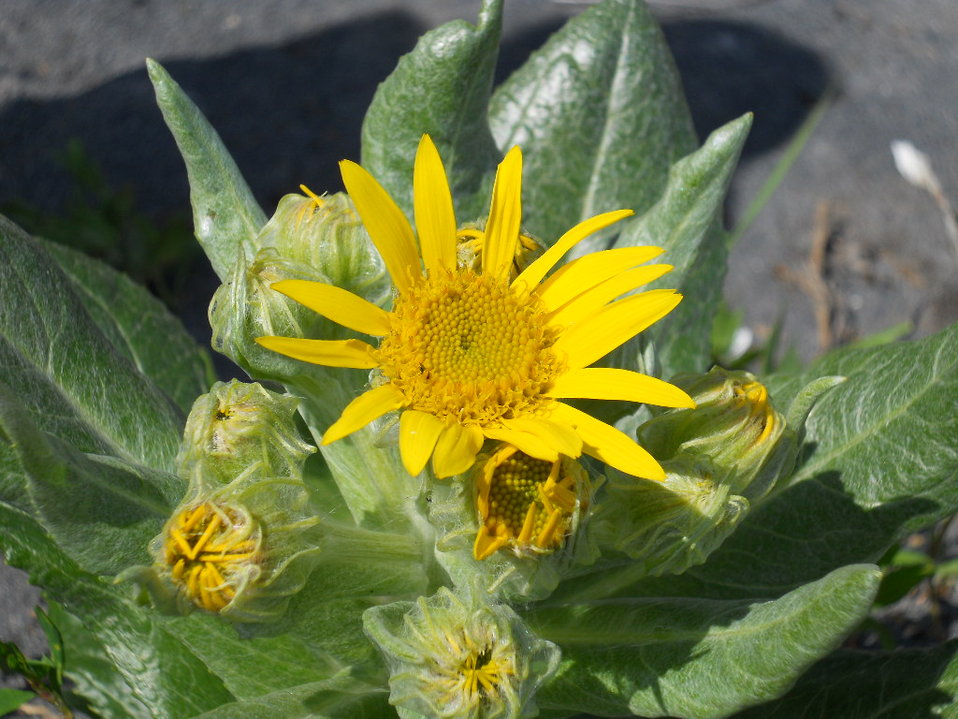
Arnica

Credit: USFWS
Photo taken by a Salmon Camp participant during a nature photography activity.

Source and Contact: Kodiak National Wildlife Refuge